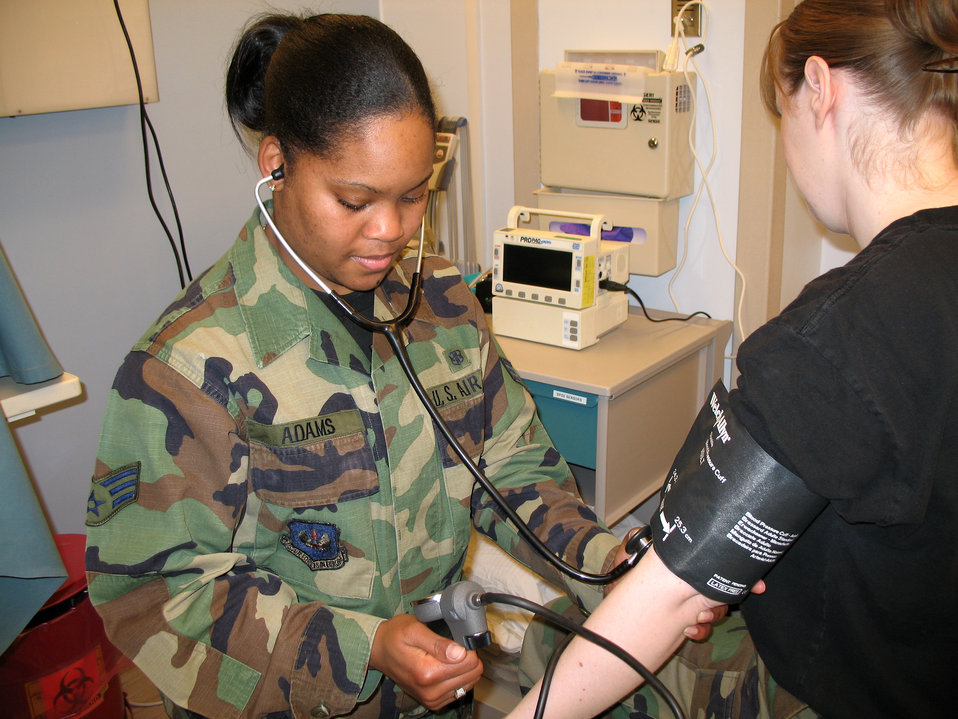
Serving through the season: Senior Airman Renika Adams

Senior Airman Renika Adams is an ambulance services technician with the 39th Medical Group at Incirlik Air Base, Turkey.